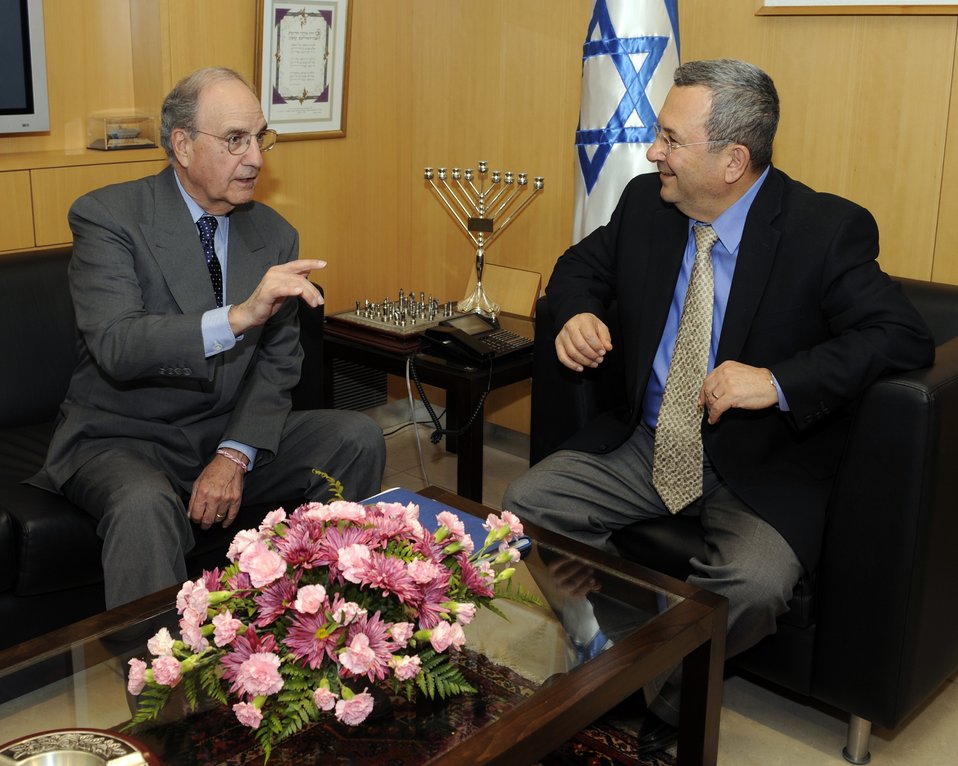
Special Envoy Mitchell Meets With Israeli Foreign Minister Barak

Special Envoy for Middle East Peace George Mitchell meets with Israeli Foreign Minister Ehud Barak at the Israeli Ministry of Defense, Tel Aviv, Israel, May 6, 2010.